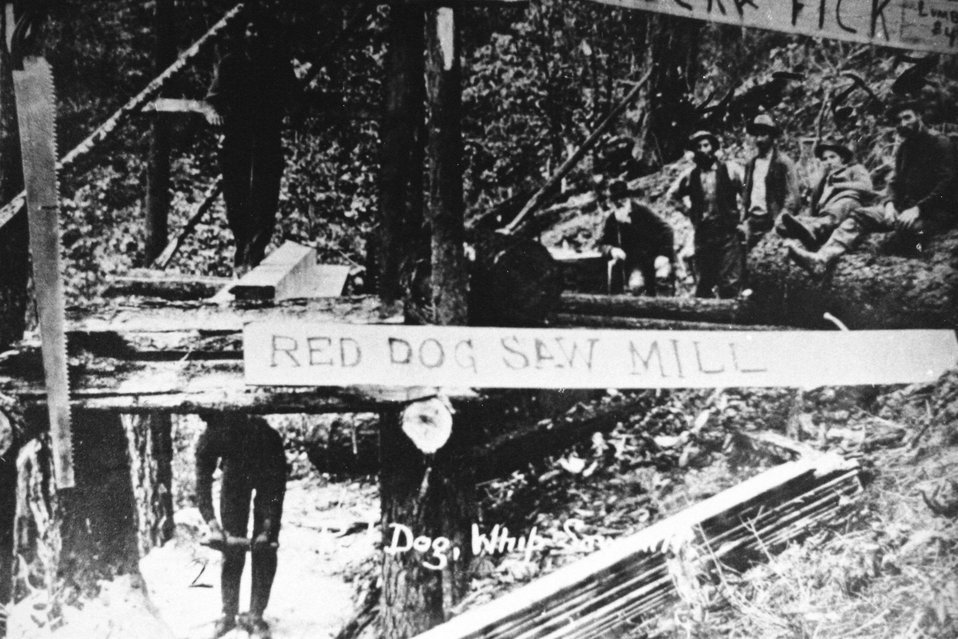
Red Dog Sawmill whipsawing.